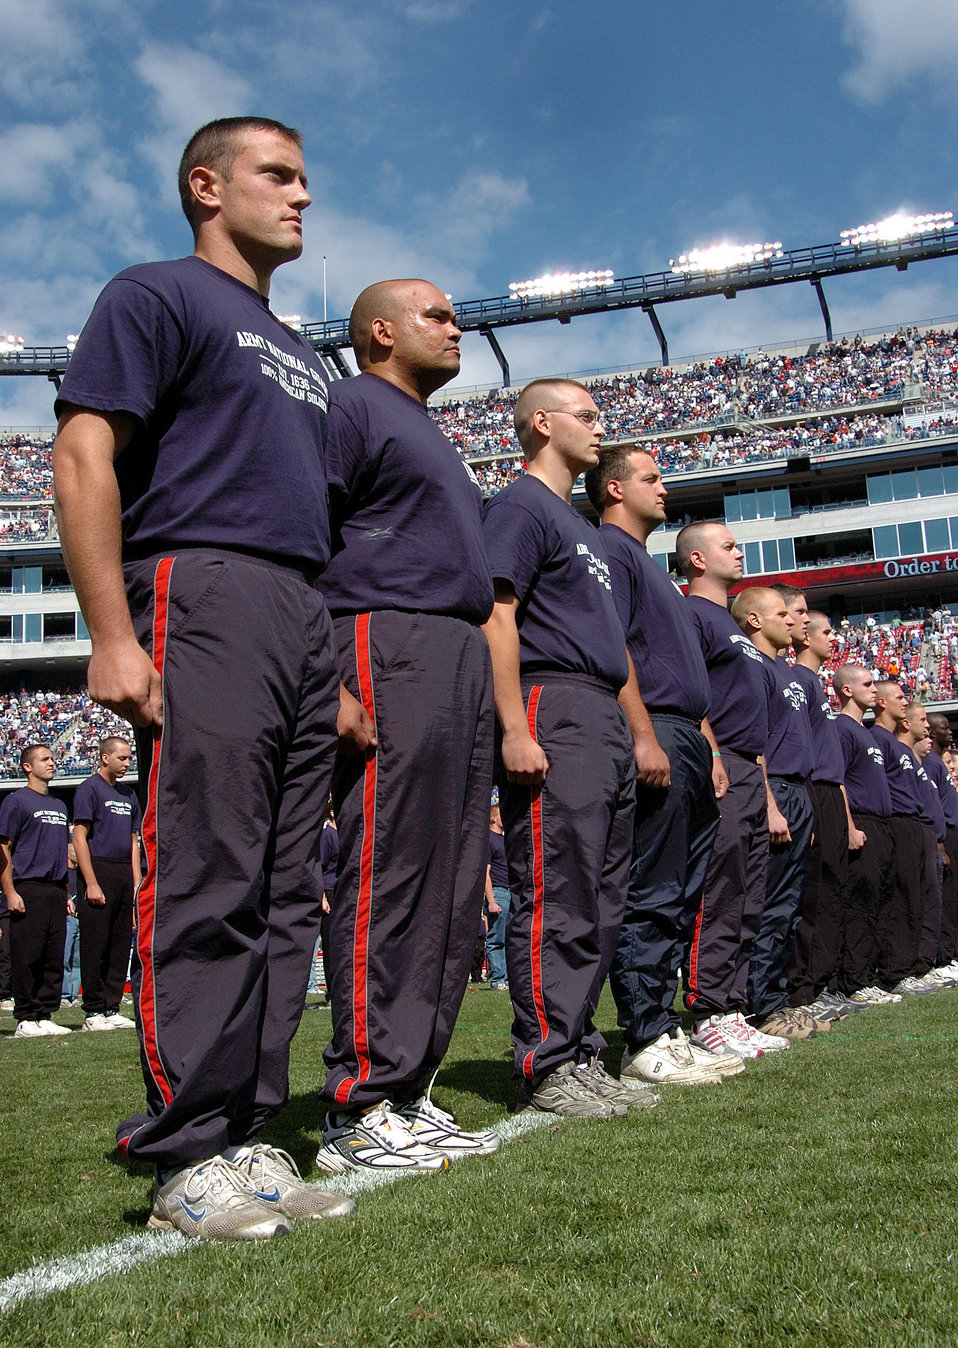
Patriots Football Game Enlistment

Hundreds line up during halftime of the New England Patriots and Buffalo Bills game to enlist in the Army National Guard. Brigadier General Oliver Mason gave the oath. Before the game, a B-2 Stealth Bomber from Whiteman Air Force Base, Mo., did a flyover that erupted the crowd. New England went on to win the game played at Gillette Stadium, 19-17.